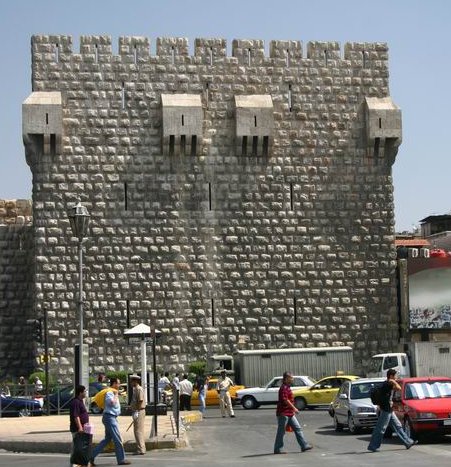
Zitadelle von Damaskus, eigenes Foto von 09/2006, public domain,